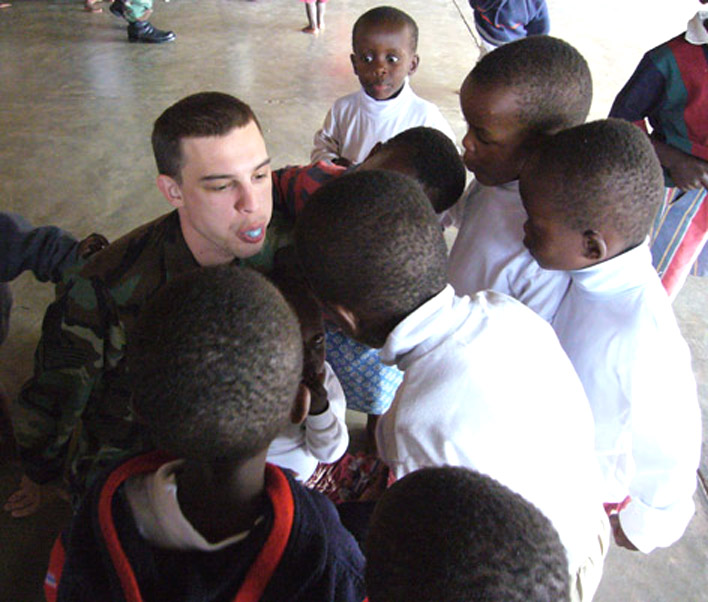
Ramstein Airmen connect with Rwandan children

Staff Sgt. Jack Brown teaches Rwandan orphans how to blow a bubble with gum during a visit at an orphanage in Kigali. Airmen from Ramstein Air Base, Germany, delivered donations collected from the Kaiserslautern Military Community. Sergeant Brown is assigned to the 700th Contracting Squadron.